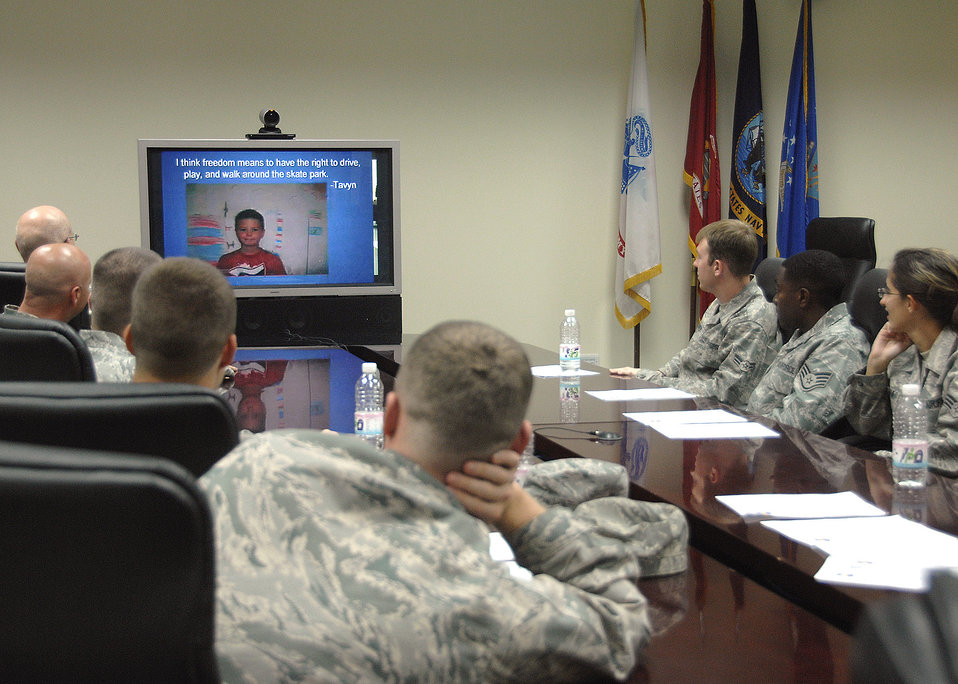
Sharing experiences with 'video pen pals'

Members of the 386th Expeditionary Logistics Readiness Squadron Aerial Port flight at an air base in Southwest Asia interact with third graders during a video teleconference session Nov. 12 with children from Mustang Valley Elementary school in Mustang, Okla. The children read poems they had written about Veterans Day, and asked questions of the Airmen about their experiences while being deployed in support of operations Iraqi Freedom and Enduring Freedom. The students and teachers at the school are planning to send care packages to the Airmen, thanking them for their service.